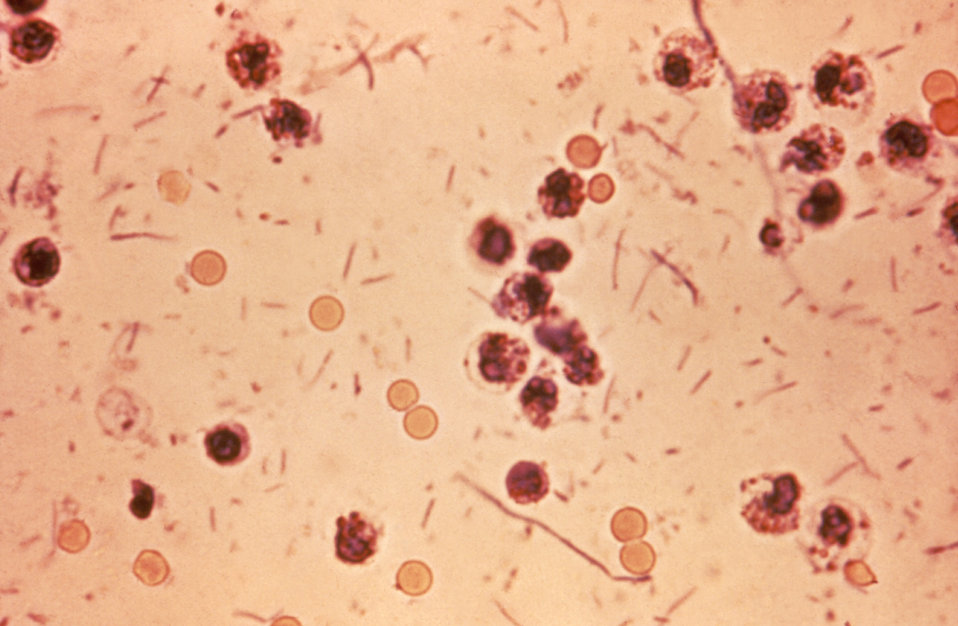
This photomicrograph revealed stool exudates in a patient with shigellosis, which is also known as 'Shigella dysentery', or 'Bacterial dysentery'.